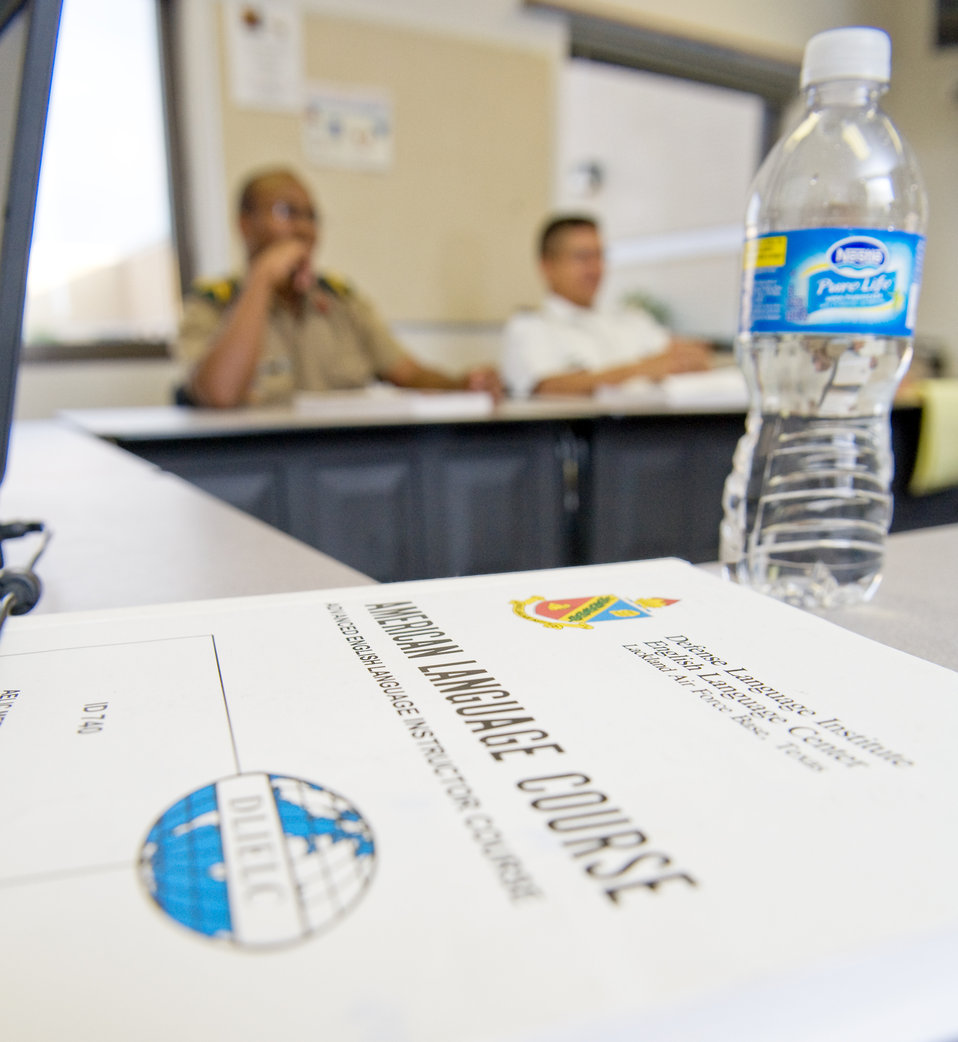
Lackland-based institute teaches English to partner nations

Course textbooks and water are necessary items in the American English Language Instructor Course Oct. 22at the Defense Language Institute, Lackland Air Force Base, Texas. Each day, the future English instructors carry on long discussions after evenings of study work.